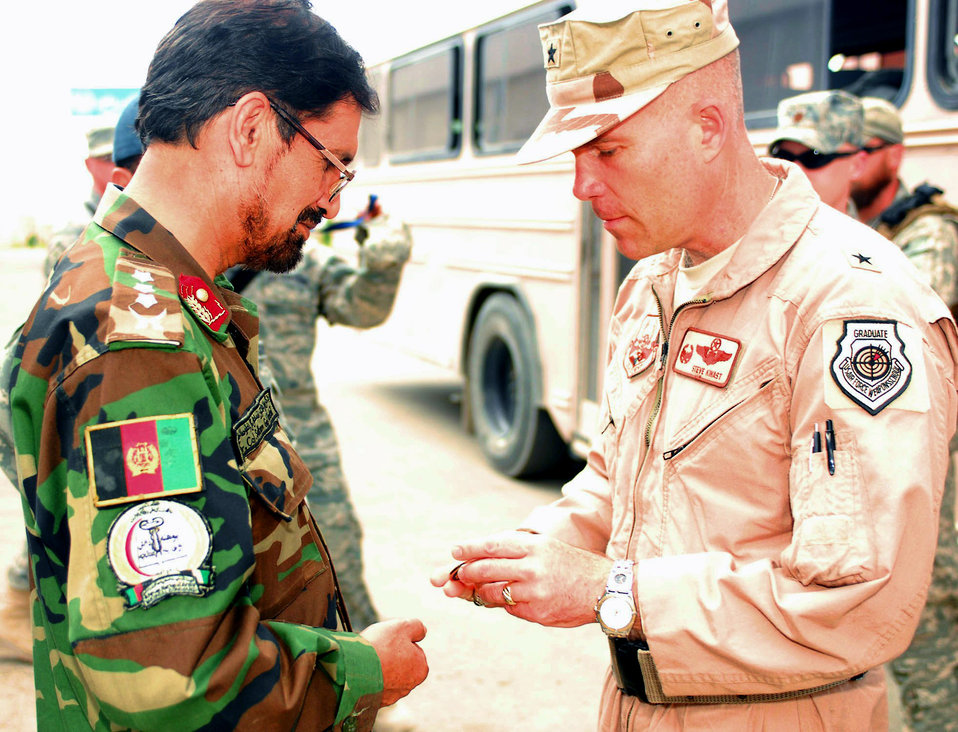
Airmen demonstrate their importance to Afghanistan, joint operations

Brig. Gen. Steve Kwast presents Afghan National Army Col. (Dr.) Sultangal Totakhail a 455th Air Expeditionary Wing commander's coin during a tour of Paktia Regional Medical Hospital at Forward Operating Base Lightning, Afghanistan, Aug. 30, 2009. Airmen assigned to FOB Lightning are there as joint expeditionary tasked Airmen who work day-to-day for Army commanders while they're also assigned administratively to Air Force commanders under the 755th Air Expeditionary Group at Bagram Airfield, Afghanistan. The JET Airmen are part of the Embedded Training Team here, which mentors Afghan National Army Forces. General Kwast is the 455th Air Expeditionary Wing commander.